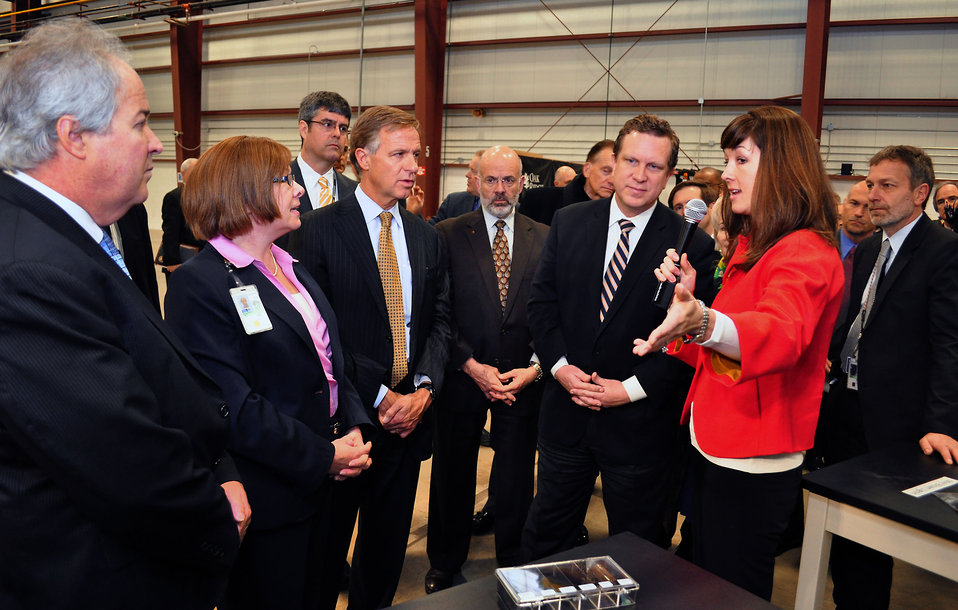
Carbon Fiber Technology Facilty Open House Oak Ridge Tennessee

13-025 DOE photo Lynn Freeny